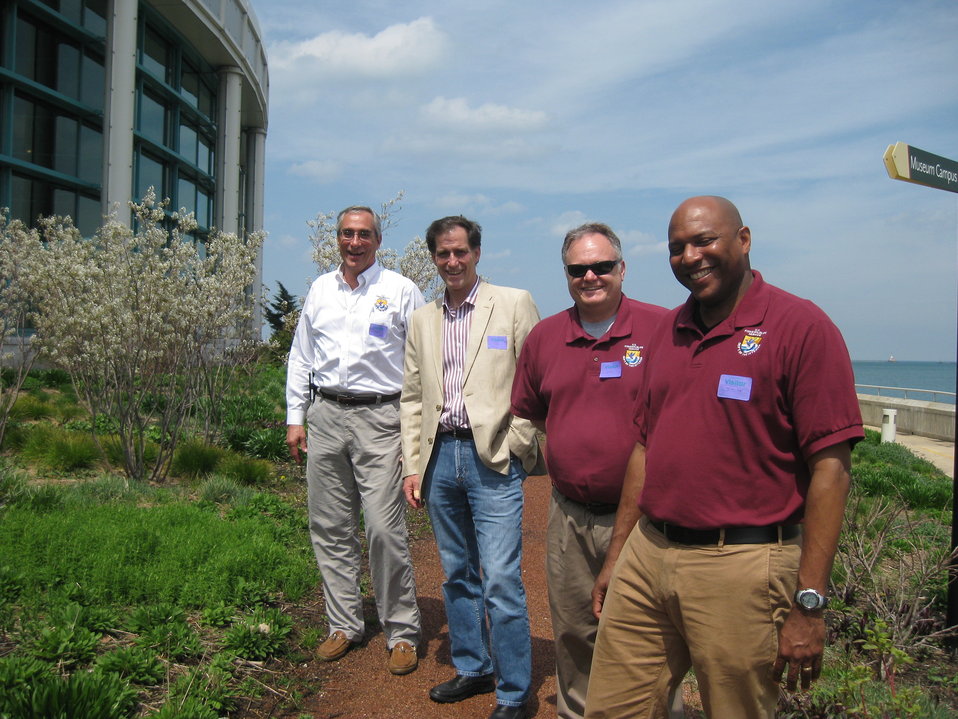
FWS Dan Ashe Tom Mellius Tour Lakefront Bird Habitat

FWS Director Ashe and R3 RD Tom Mellius tour lakefront bird habitat with Chicago FO staff Mike Redmer and Shawn Cirton
Chicago Park District Burnham Corridor Community Planting Day
May 10, 2014
Photo by USFWS; Louise Clemency